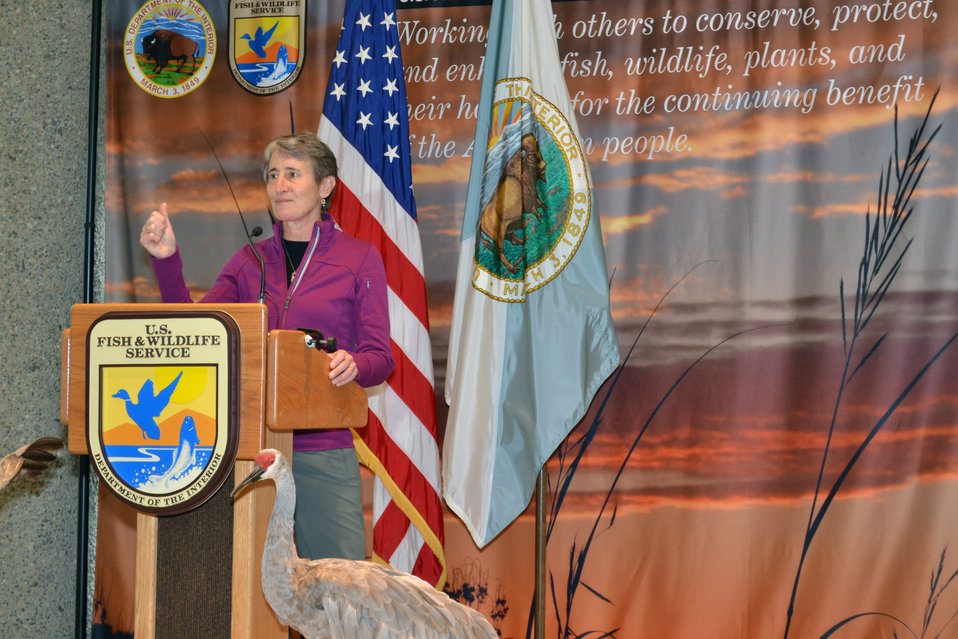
Banking on Nature Press Conference

Secretary Sally Jewell announces Banking on Nature report results at Minnesota Valley National Wildlife Refuge.